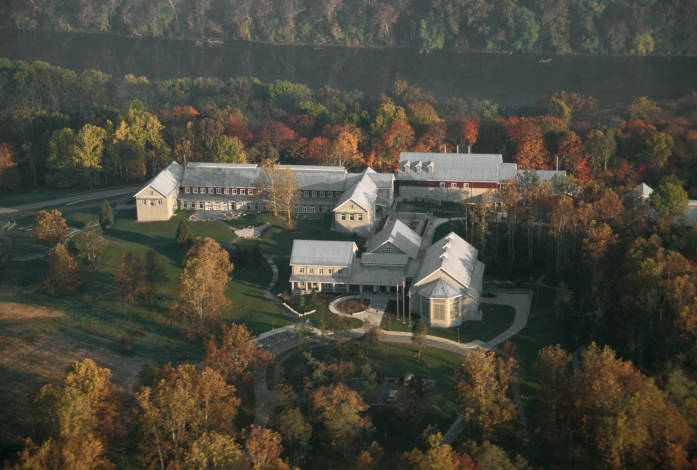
National Conservation Training Center (NCTC) campus